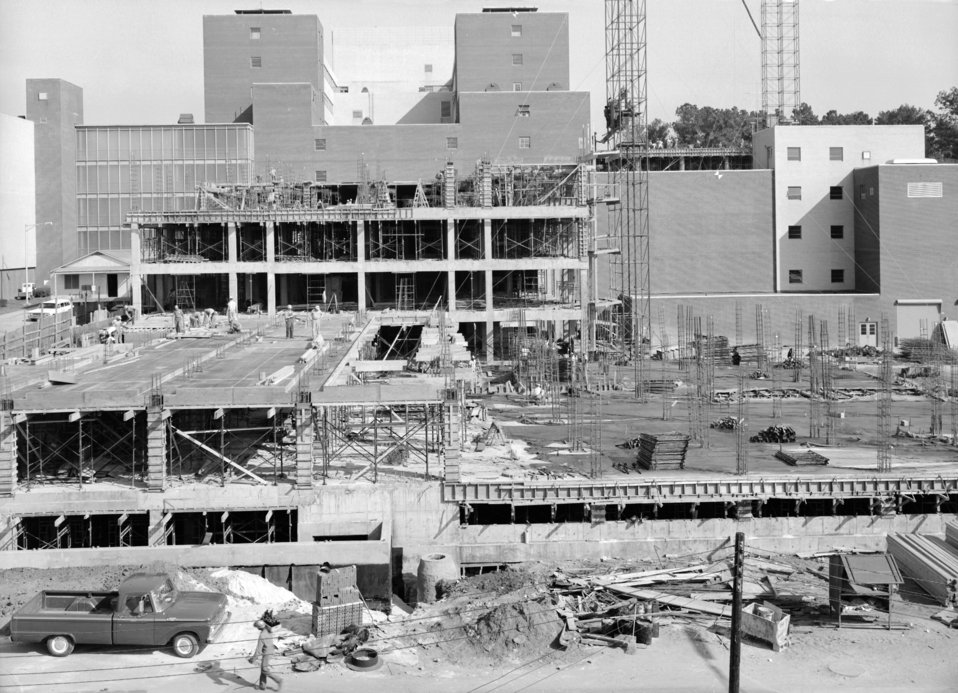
Lab additions E & D under construction at the Roybal Campus, Clifton Road, in 1964 (looking northeast).